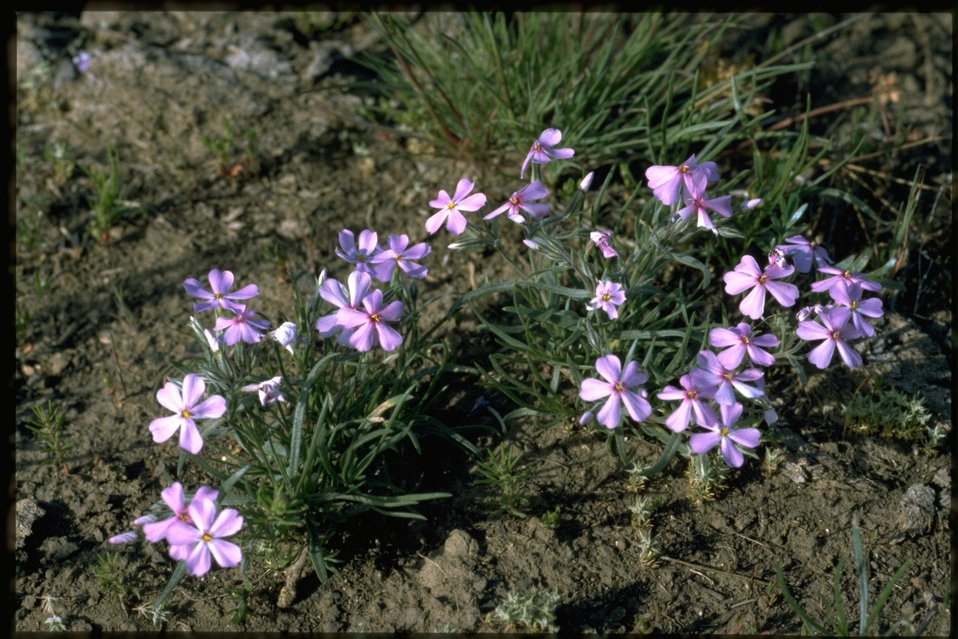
Medium shot Longleaf Phlox, Phlox Longifolia, wildflowers.